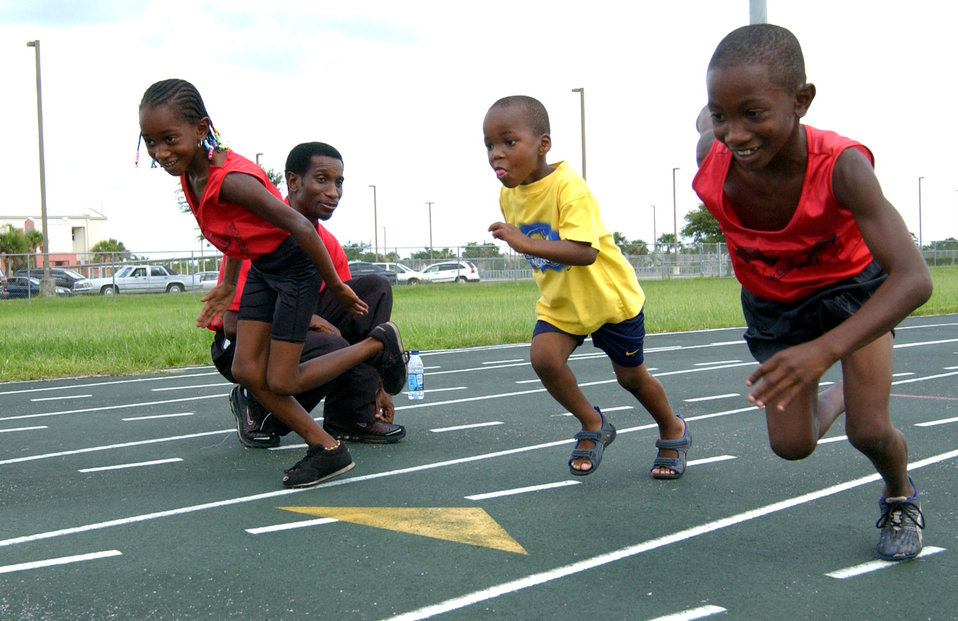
Track coach has youth running for the future

Coach Gary Evans coaches his daughter, 6-year-old Nadiria Evans (left), 5-year-old Trenton Growins (middle) and his 10-year-old son Tariq Evans in the 100-meter sprint. Since founding the nonprofit M-Town Track Club in 1992, 21 of the coach's athletes have received scholarships to schools such as the University of Alabama, Vanderbilt and Louisiana State University.